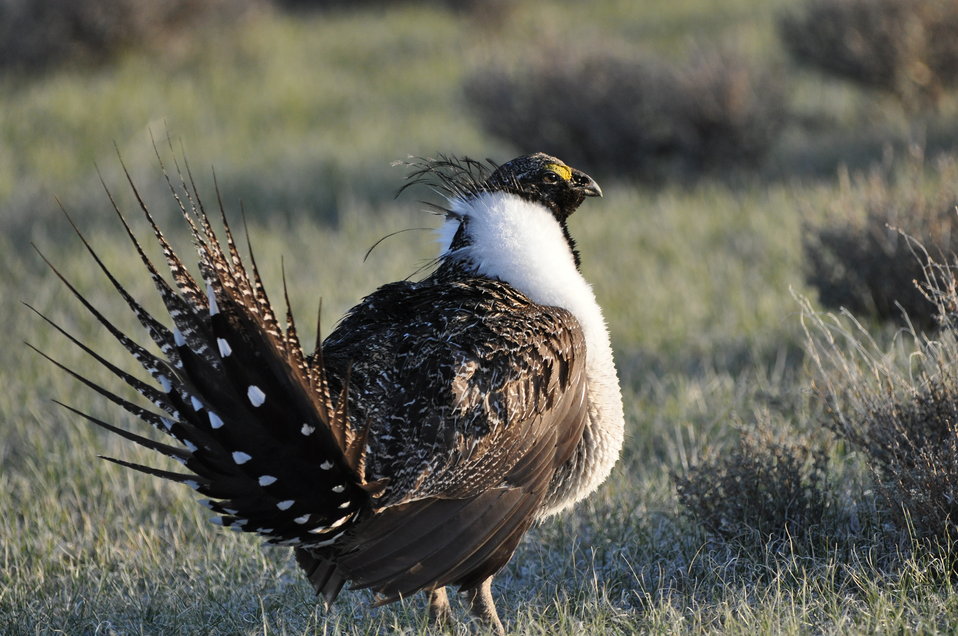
Greater Sage-Grouse

Photo Credit: Jeannie Stafford/USFWS
A greater sage-grouse male struts at a lek (dancing or mating ground) near Bridgeport, CA to attract a mate.